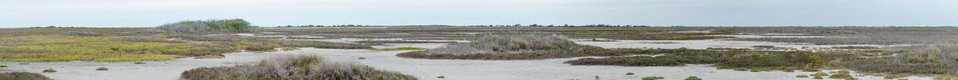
Virtual panorama from the Aransas National Wildlife Refuge fishing pier in Austwell, TX, and San Antonio Bay, on Friday, Dec. 16, 2011. Four rare and endangered Whooping Cranes (white birds) can be seen in the center of the tidal marsh. Phragmites reed grass stabilizes the shore while live oak (in the distance) provides deep root stabilization and a windbreak from off shore winds. The Aransas Refuge is a 15,000-acre wildlife sanctuary established in 1939. Its fresh water comes from the San Antonio River, which flows by the historic Alamo southeasterly towards the Guadalupe River at the estuary of San Antonio Bay, the primary body of water for the refuge. (Download original size for best viewing, wider panorama available upon request) USDA photo illustration by Lance Cheung.